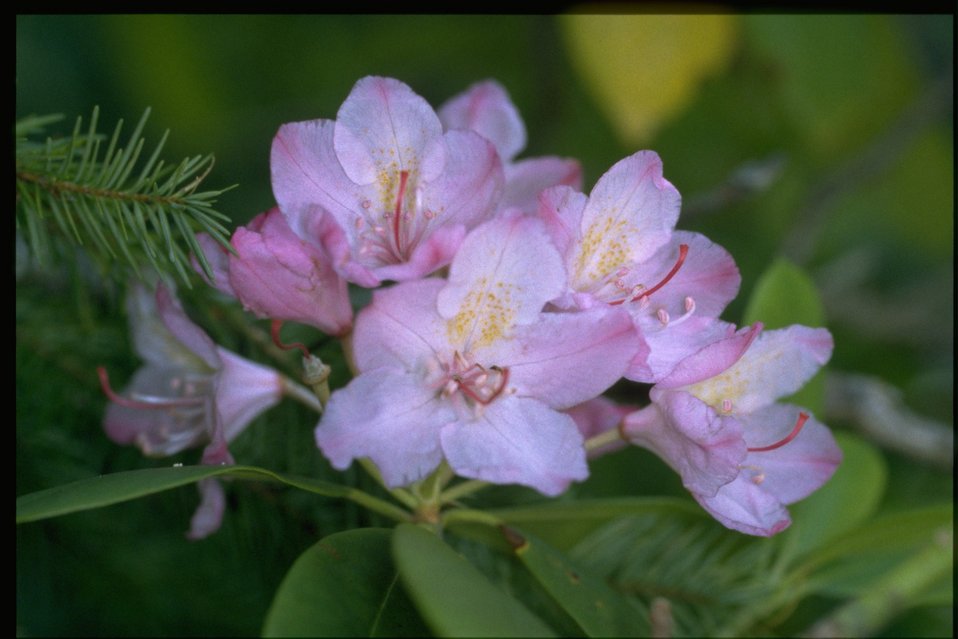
Closeup shot of Rhododendron macrophyllum.